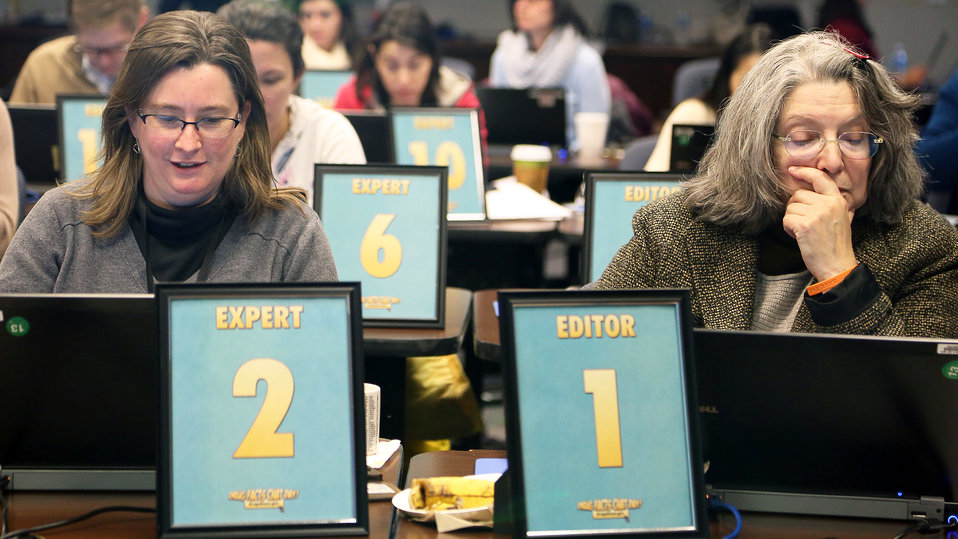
Teams of Scientists Volunteer during Chat Day

Chat Day Event held by the National Institute on Drug Abuse during its National Drug Facts Week Jan. 27-Feb. 2, 2014. Scientists from NIDA and other agencies answered questions about drugs from teens around the world on Jan. 29th in Rockville, Maryland.